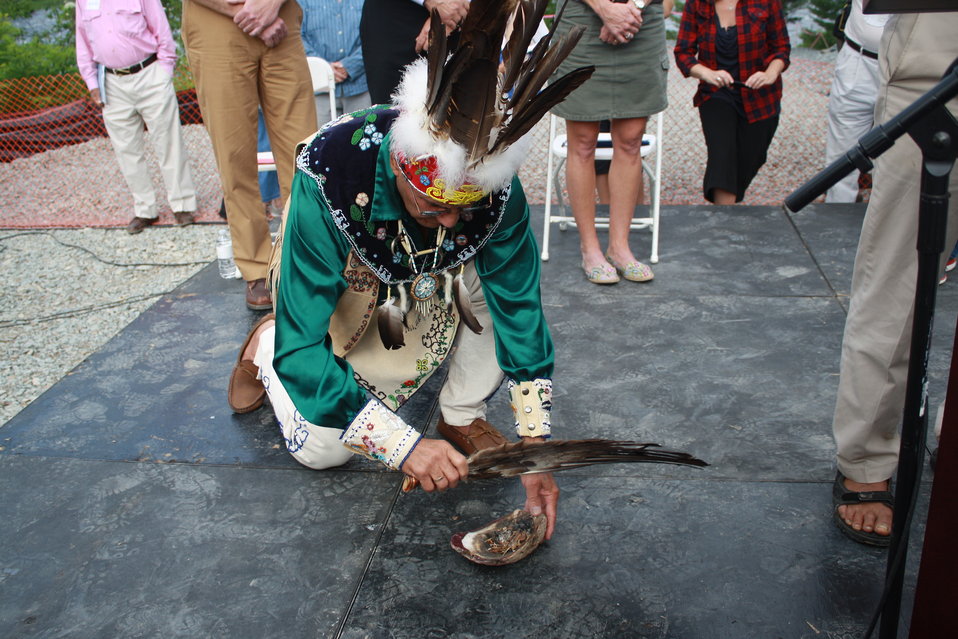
Veazie Dam Removal

Penobscot Indian Nation Elder Butch Phillips continues the traditional smudging ceremony.